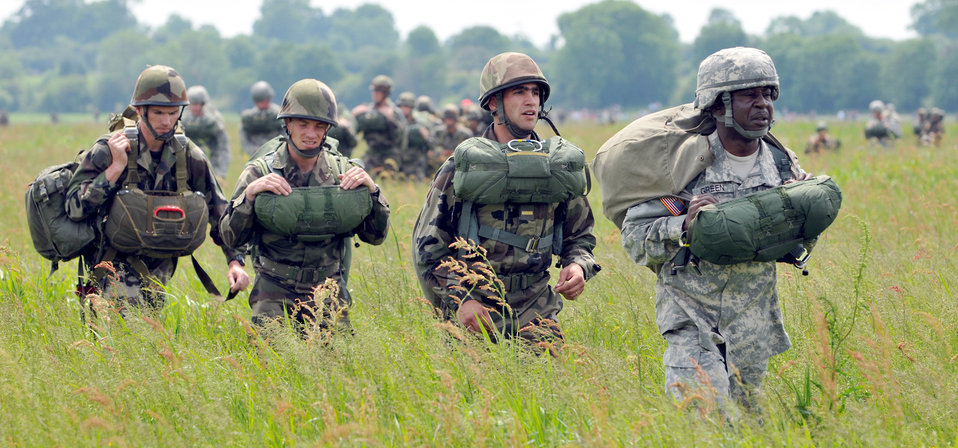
D-Day 66th anniversary

French and American paratroopers hike June 5, 2010 in Normandy, France to the same drop zone used by Allies on D-Day. The jump was part of a ceremony commemorating the 66th anniversary of the operation.